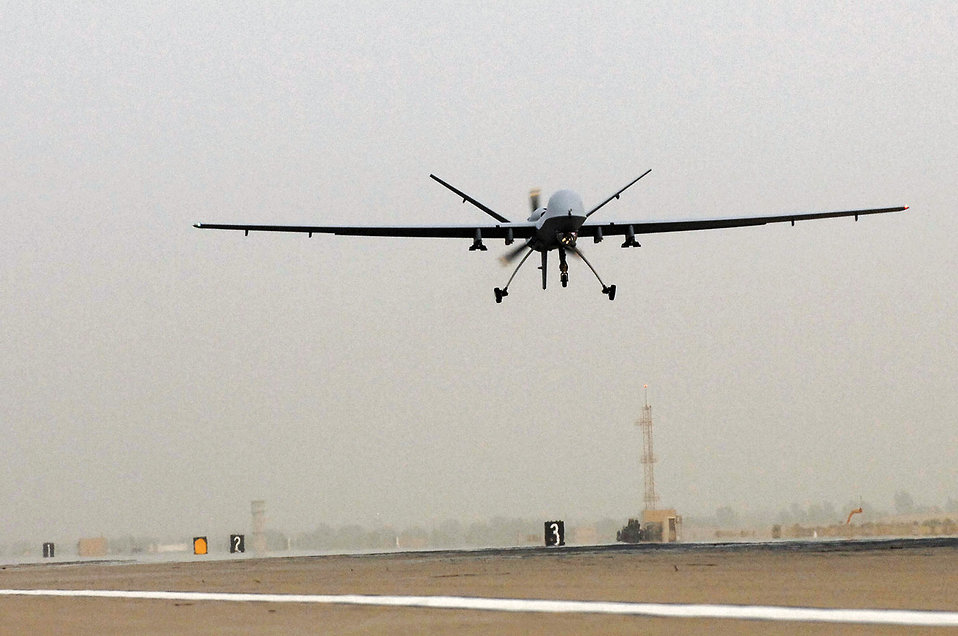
Reaper patrols Iraq sky

An MQ-9 Reaper remotely piloted aircraft takes off July 17 from Joint Base Balad, Iraq. The Reaper can loiter over battlefields or targets for hours at a time without refueling and carries up to 3,750 pounds of laser-guided munitions, giving ground commanders unprecedented situational awareness and the ability to bring the right amount of force to bear on a target. The Reaper, deployed from Creech Air Force Base, Nev., flew its first combat mission over Iraq July 18.